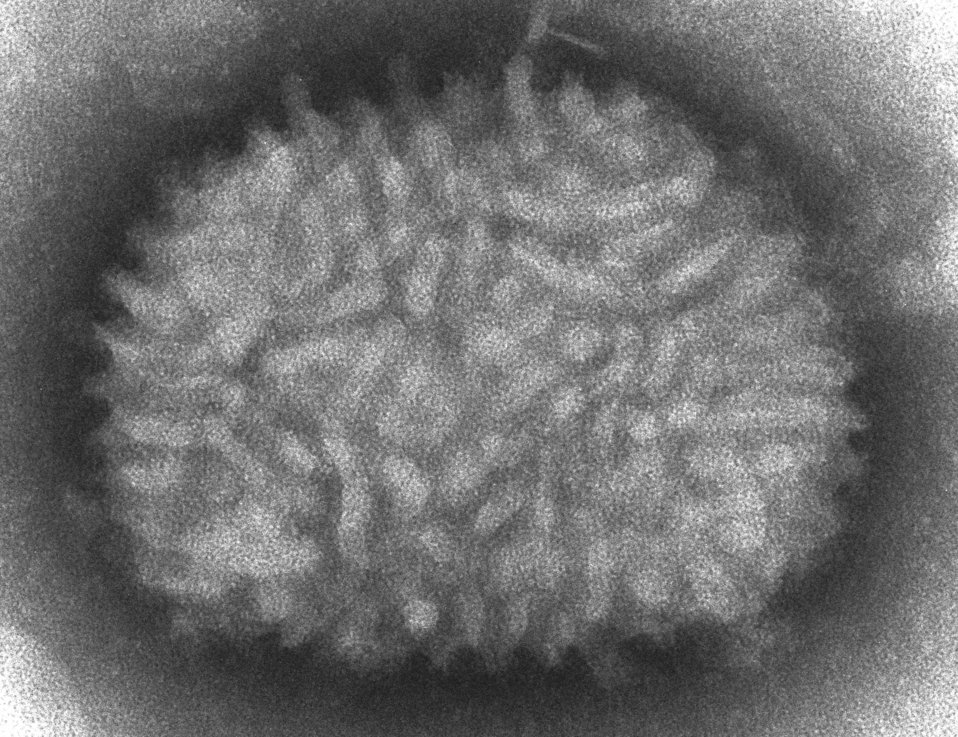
An electron micrograph of a Vaccinia virus.